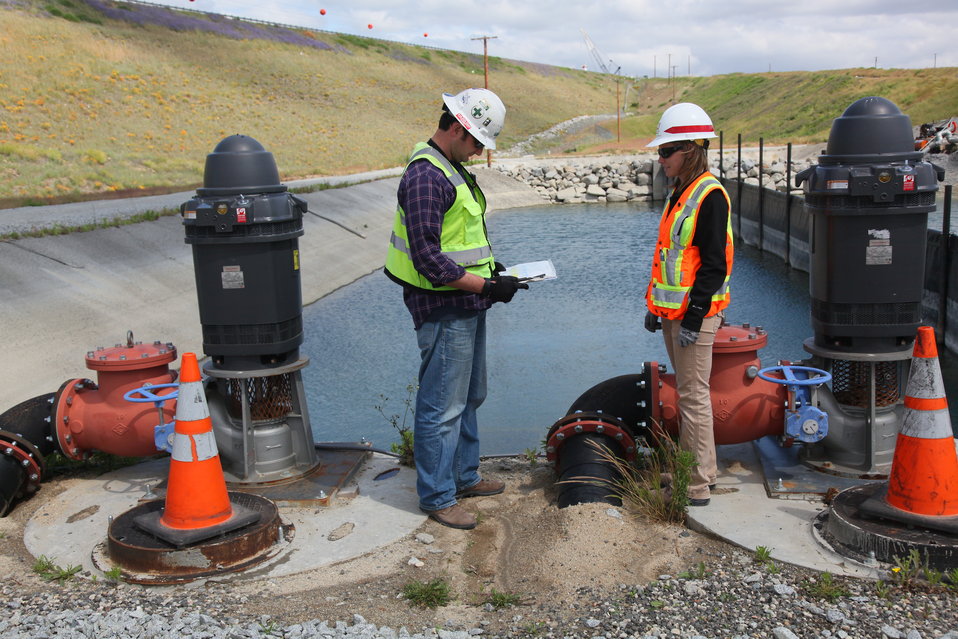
Storm water pollution prevention plan at the Folsom JFP auxiliary spillway

Michelle Lockhart (right), a civil engineer with the U.S. Army Corps of Engineers Sacramento District, and Jon Balzer, a civil engineer and contractor for the Corps, perform a post rainfall event inspection at the excavation site for the auxiliary spillway at the Folsom Dam in Folsom, Calif., April 26, 2012. Runoff that enters the excavation site is treated, monitored and filtered before being pumped into Folsom Lake. Lockhart and Balzer inspected water ponds, which capture runoff, for erosion damage. The auxiliary spillway construction is part of the Folsom Dam Joint Federal Project, a joint effort of the Sacramento District, the U.S. Bureau of Reclamation, the Central Valley Flood Protection Board and the Sacramento Area Flood Control Agency to improve the safety of the dam and reduce flood risk for the greater Sacramento area.